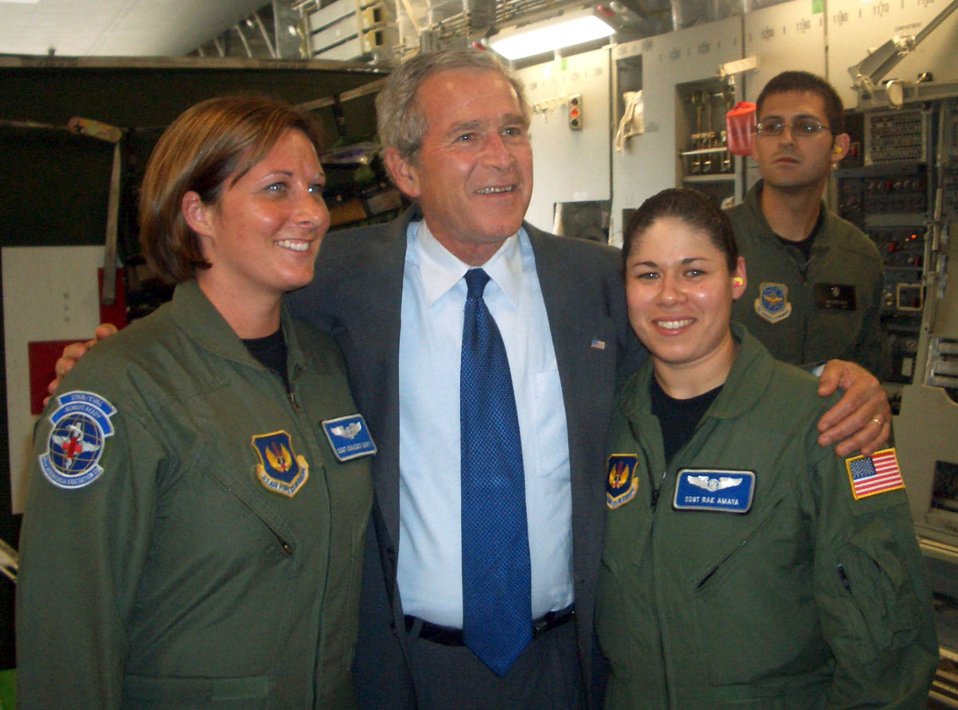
President Bush meets Ramstein crew after medical flight

President George W. Bush thanks Staff Sergeants Chassidy Dority and Raelene Amaya for their service to their country July 10 after flying a mission from Ramstein Air Base, Germany, to Andrews Air Force Base, Md. The two NCOs are assigned to the 86th Aeromedical Evacuation Squadron.